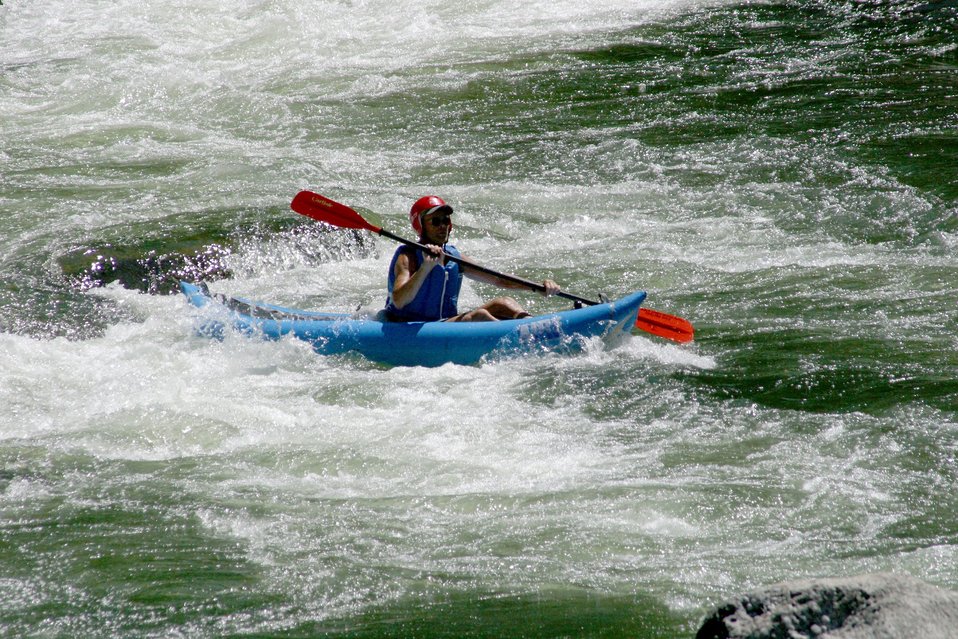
Boaters negotiate Blossom Rapids.